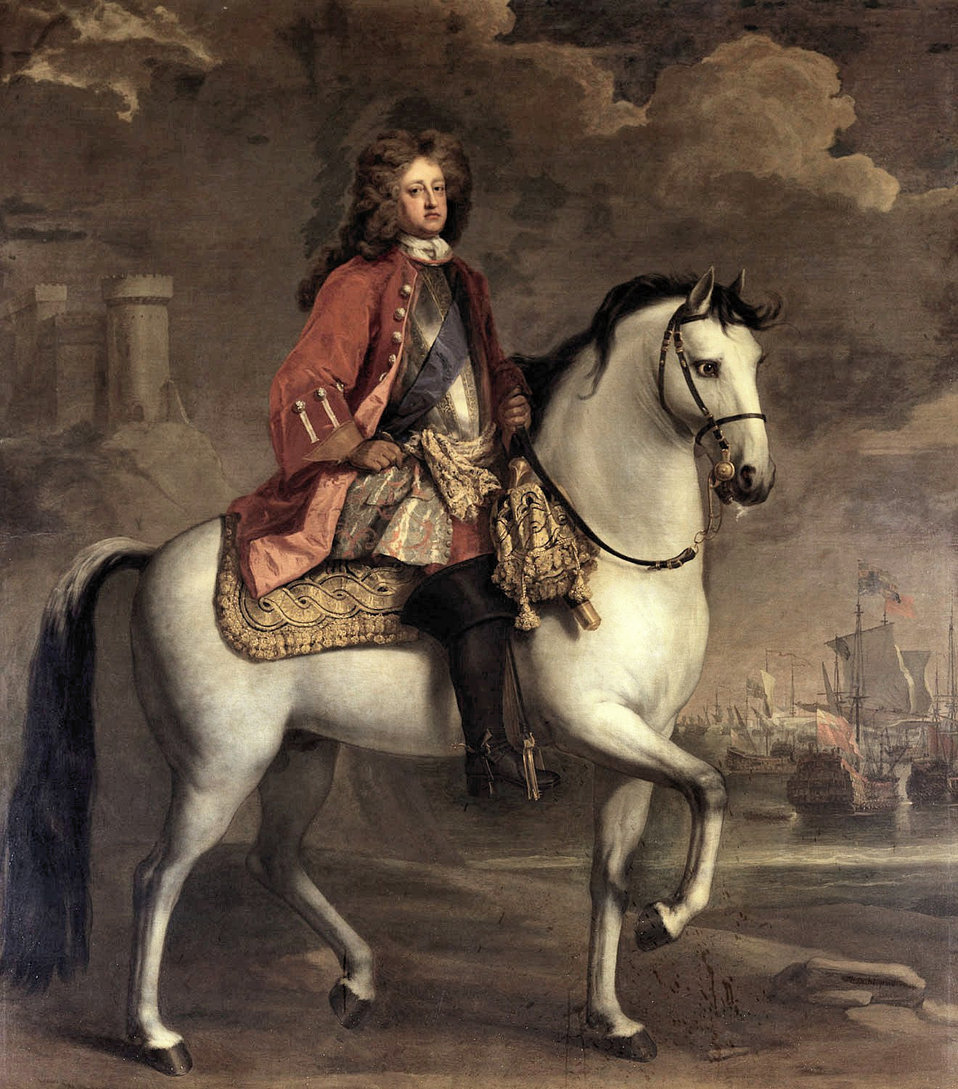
Equestrian portrait of Prince George of Denmark - Dahl 1704